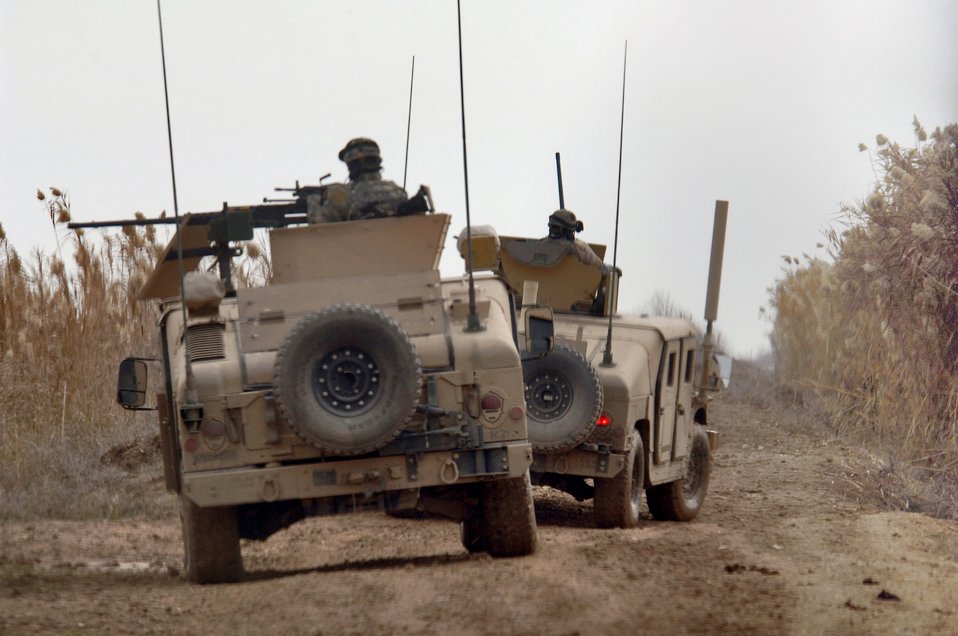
Infrastructure inspection

KIRKUK, Iraq (AFPN) -- Soldiers with the 555th Combat Support Battalion (Mechanized) provide security for the 732nd Expeditionary Civil Engineer Squadron's petroleum oil and infrastructure team, or POInT, as they travel throughout the region.